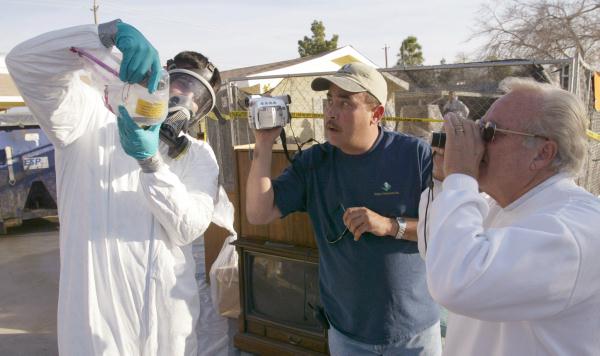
Worker displays cleaned up mercury

Small amounts of mercury can result in a big, expensive cleanup. EPA responds to Nevada mercury spill, where a teen spread mercury all over his home -- poisoning himself and his dog, Snowflake. A worker in protective gear holds up a bag with a small amount of the highly toxic liquid metal.